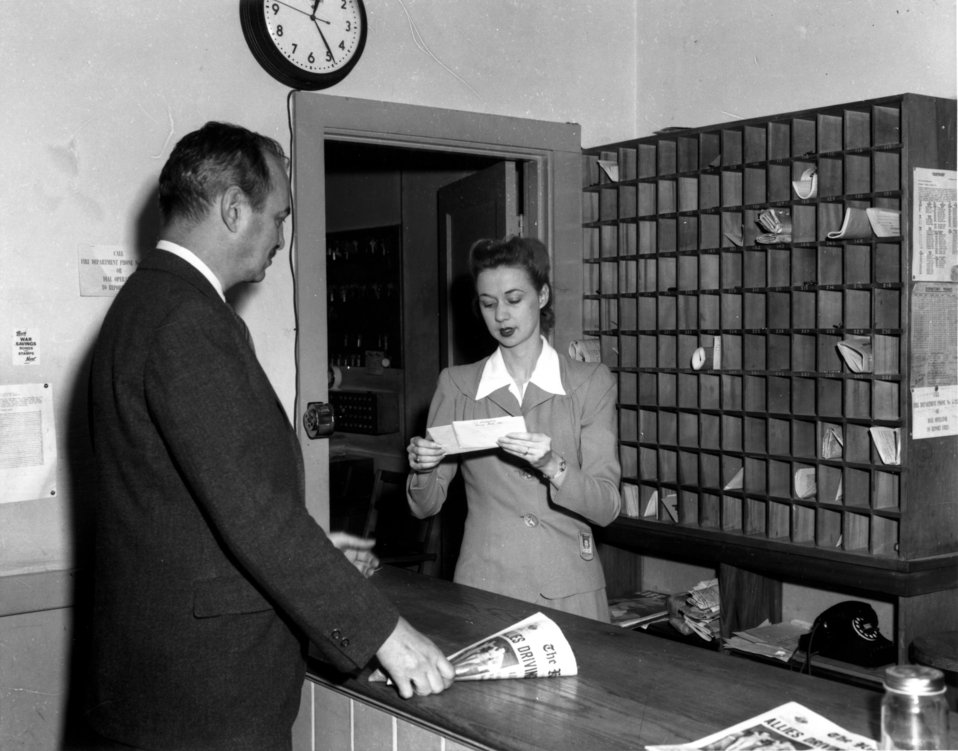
Housing at Oak Ridge